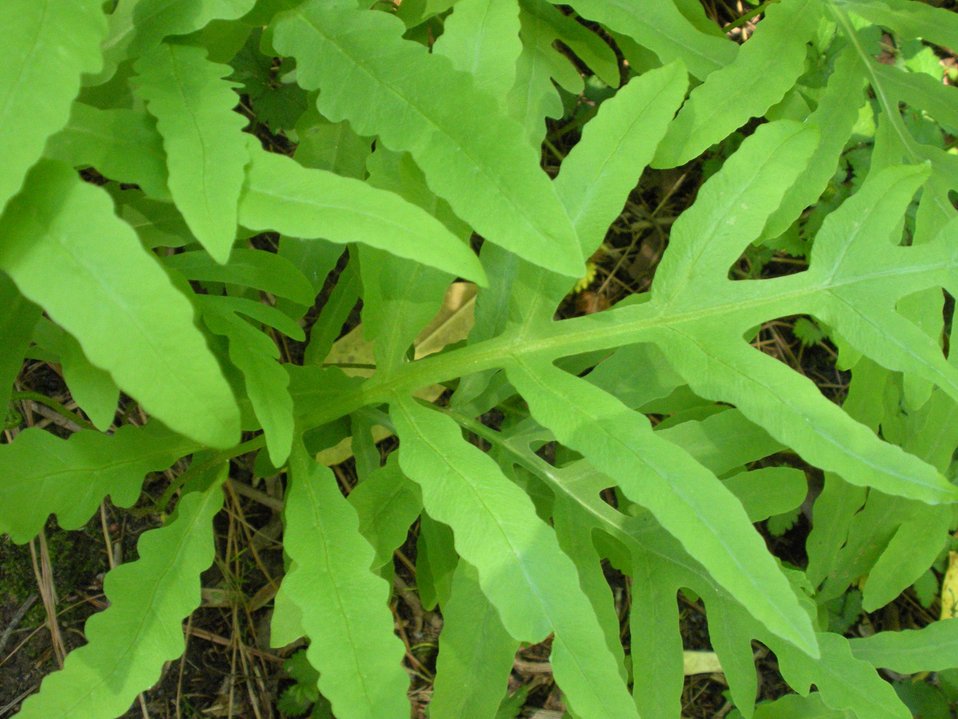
A type of fern.